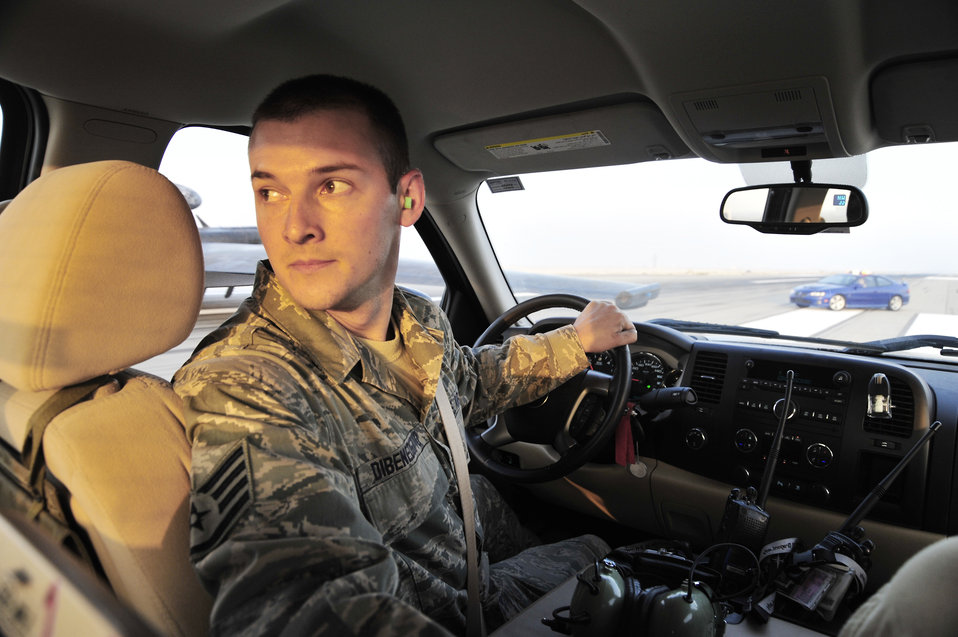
U-2 exceeds 25,000th hour of flight

Staff Sgt. Austin P. Dibenedetto gears-up for a the U-2 takeoff Oct. 18, 2009, at an air base in Southwest Asia. Sergeant Dibenedetto is assigned to the 380th Aircraft Maintenance Squadron.